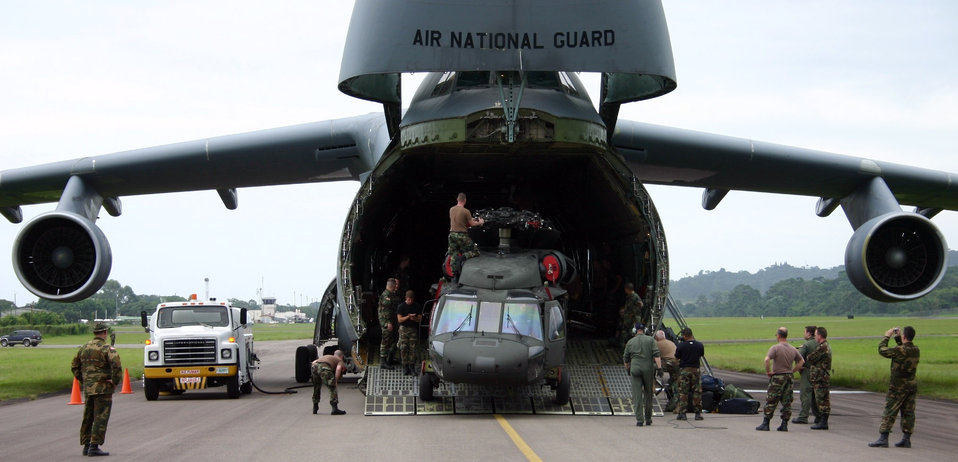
'Securing the future'

LA CEIBA, Honduras (AFPN) -- Crew members move a UH-60 Black Hawk off of a C-5 Galaxy in La Ceiba, Honduras. The C-5, from the 105th Airlift Wing, New York Air National Guard, delivered three Black Hawks and a Humvee for the